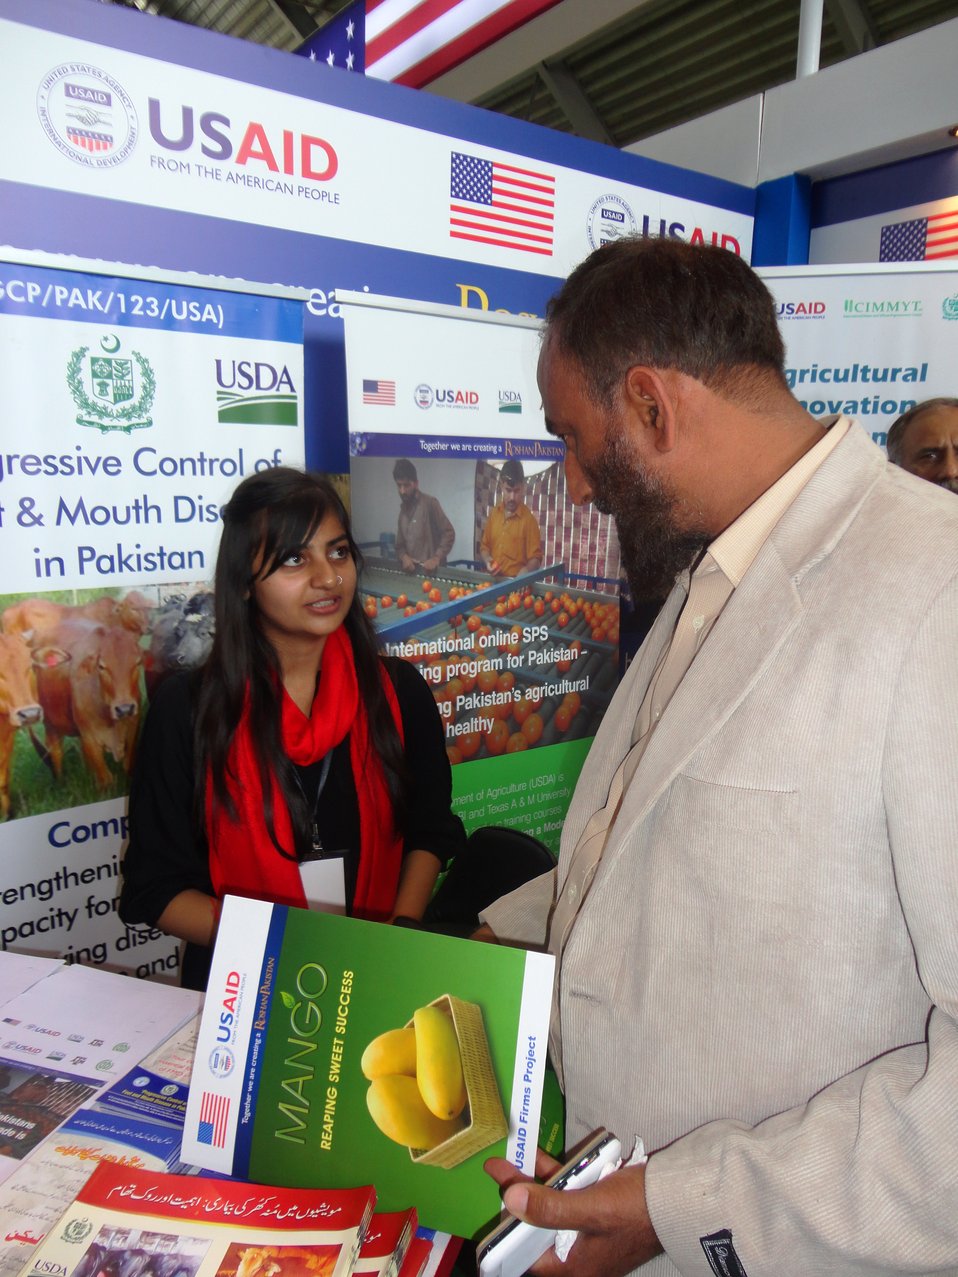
USDA SPS Project at the DAWN Sarsabaz Agri Expo

Visitor taking interest in different items displayed at the USDA Stall at the Dawn Sarsabz Agri Expo.